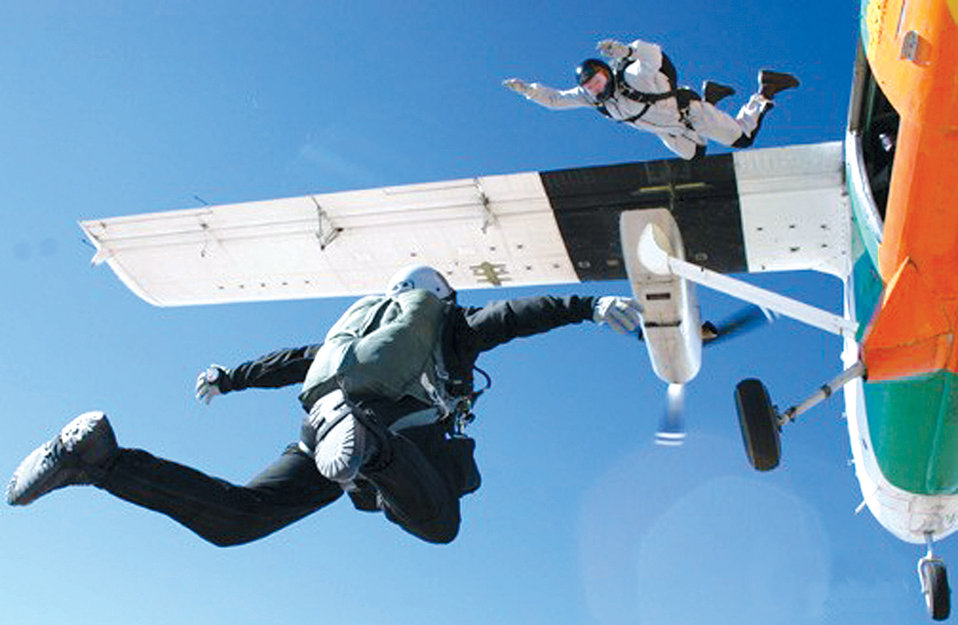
Test parachutists jump to conclusions

Tech. Sgt. Shawn Studer exits the plane to join Staff Sgt. Scott Lawrence in a freefall over Edwards Air Force Base, Calif., on Tuesday, May 23, 2006. They are assigned to the 418th Flight Test Squadron's test parachutist program.